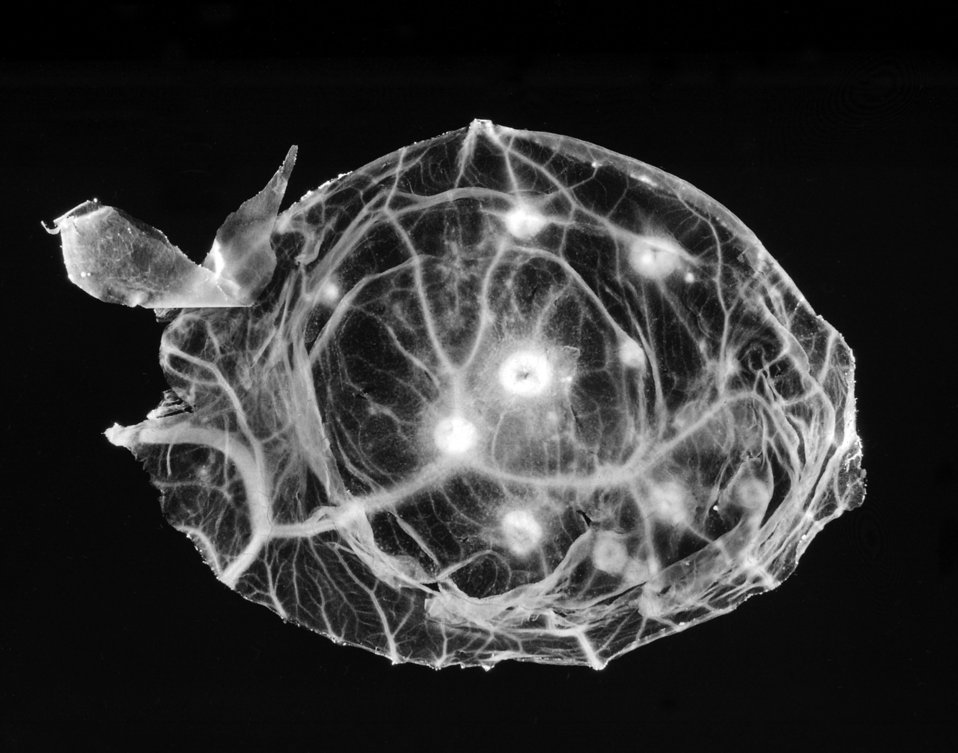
A photograph revealing smallpox virus pocks on the chorioallantoic membrane of a developing embryonic chick.